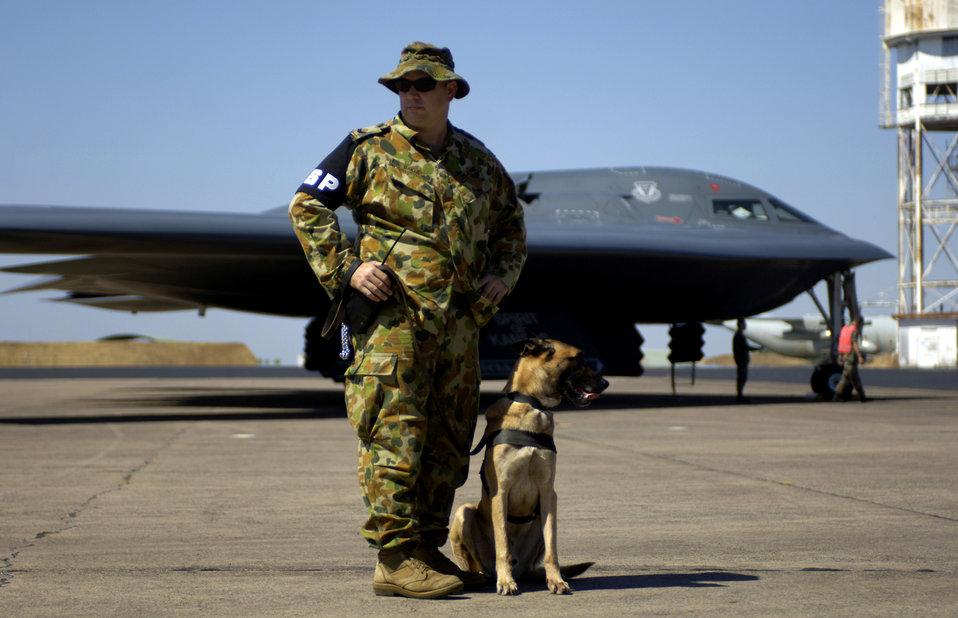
Green Lighting tests Pacific bomber force

Australian army Cpl. Tony Baker and Axle keep watch over a B-2 Spirit stealth bomber on July 27 at Royal Australian Air Force Base Darwin during exercise Green Lightning. The exercise tests U.S. capabilities and provides operational familiarity in the region for the Pacific bomber presence while also serving to enhance relations with the Australians. Corporal Baker is a K-9 handler with the Royal Australian Defense Force.